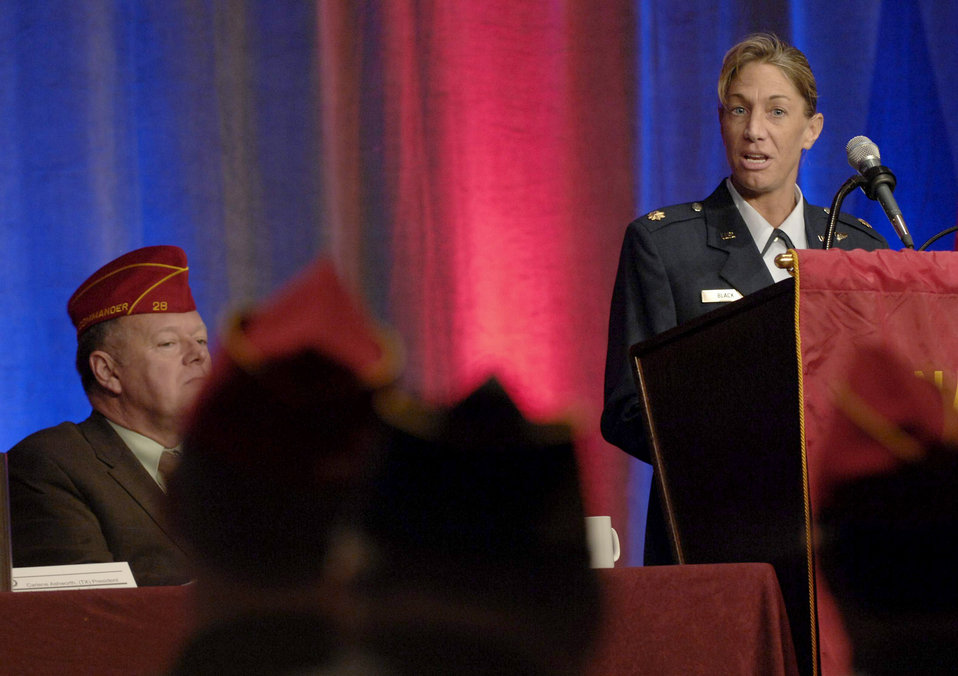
Air Force officer

Secretary of the Air Force Public Affairs Operations Communication Team Chief Maj. Allison Black shared her experiences in modern warfare with more than 700 veterans during the American Legion mid-winter conference March 22, 2011, in Washington. The former AC-130H Spectre evaluator navigator recounted how she and her crew flew into Northern Afghanistan insurgent territory in 2001, while assigned to the 16th Special Operations Squadron at Hurlburt Field, Fla. Major Black is the first female AC-130H navigator to shoot in combat operations and the first female Air Force Combat Action Medal recipient.